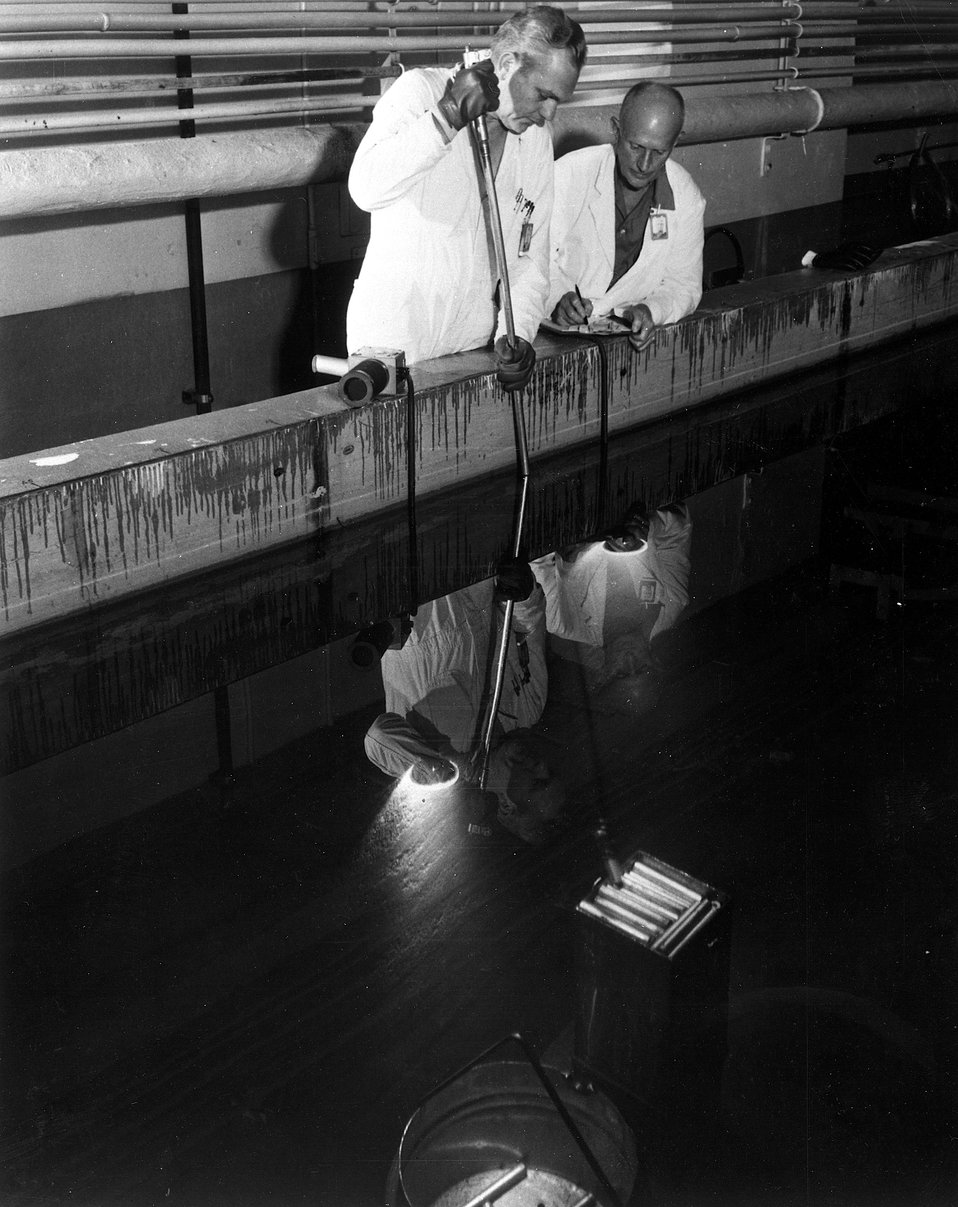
Oak Ridge, Tennessee...Unloading the Graphite Reactor for the last time. Circa 1963.